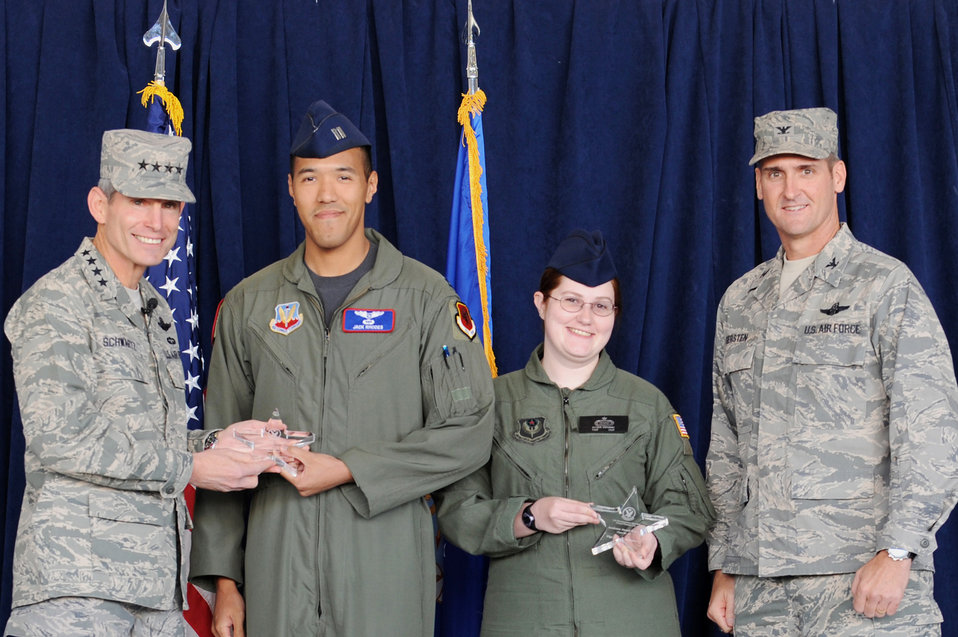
UAS mission enters new chapter with graduation

Air Force Chief of Staff Gen. Norton Schwartz and Col. Peter Gersten give a special presentation to Capt. Jack Rhodes and Tech. Sgt. Alyson Hathaway as top graduates during the initial qualification training graduation at Creech Air Force Base, Nev., Sept. 25, 2009. General Schwartz attended the ceremony as the presiding officer for the first UAS graduation. Colonel Gersten is the 432nd Wing commander.